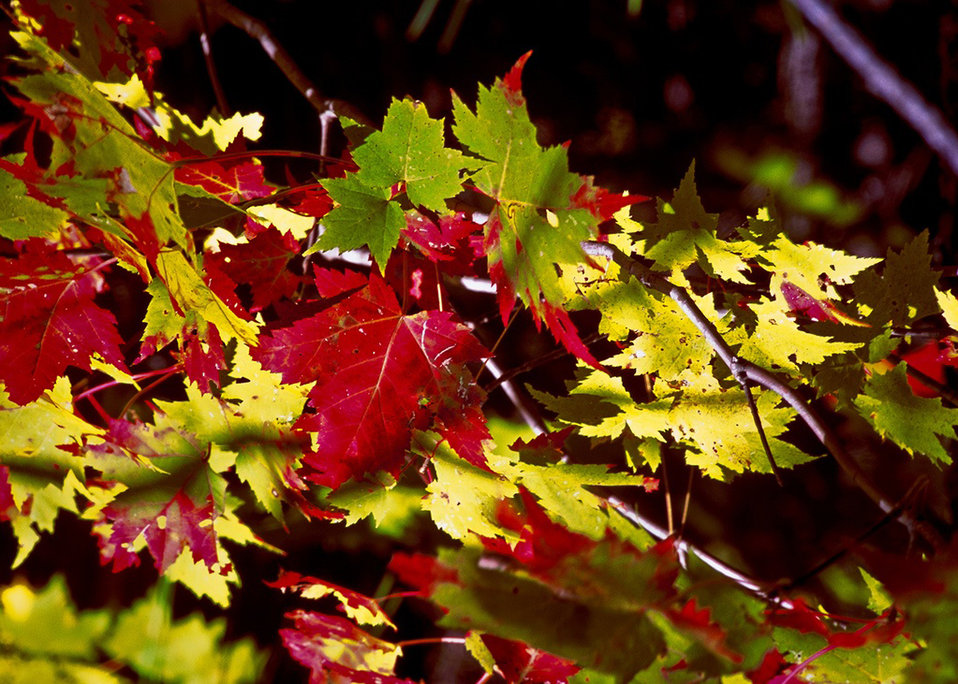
Maple leaves of many colors offer an unending palette of color at the U.S. Department of Agriculture, U. S. Forest Service, Hiawatha National Forest on the Upper Peninsula of Michigan. USDA photo,